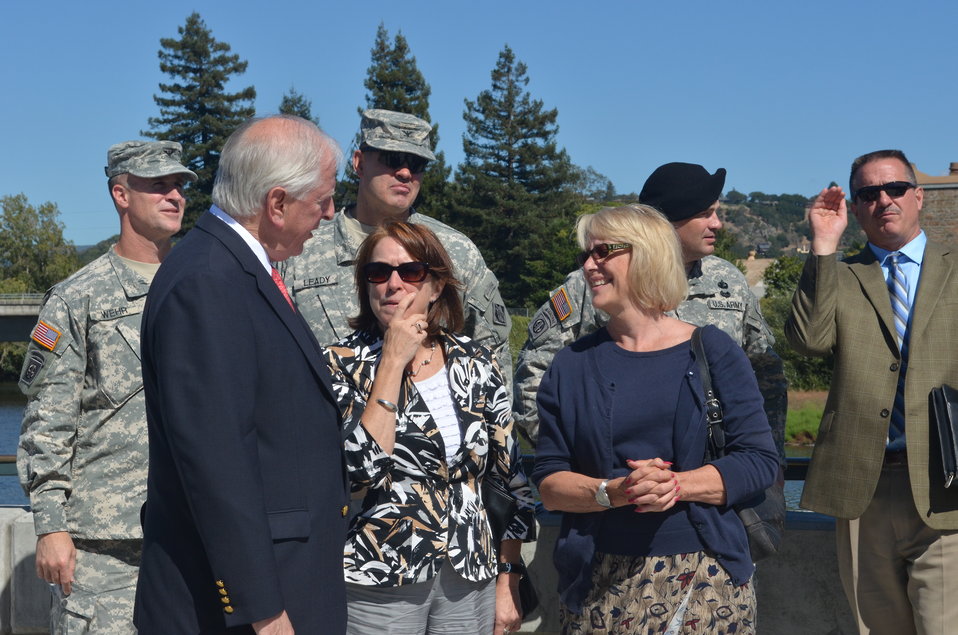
Tour of Napa flood risk reduction efforts

Congressman Mike Thompson and Napa Mayor Jill Techel disusses the importance of the Napa River project with Assistant Secretary of the Army (Civil Works) Jo-Ellen Darcy (center) during a tour of the construction. (US Army Corps of Engineers/DeDe Cordell)